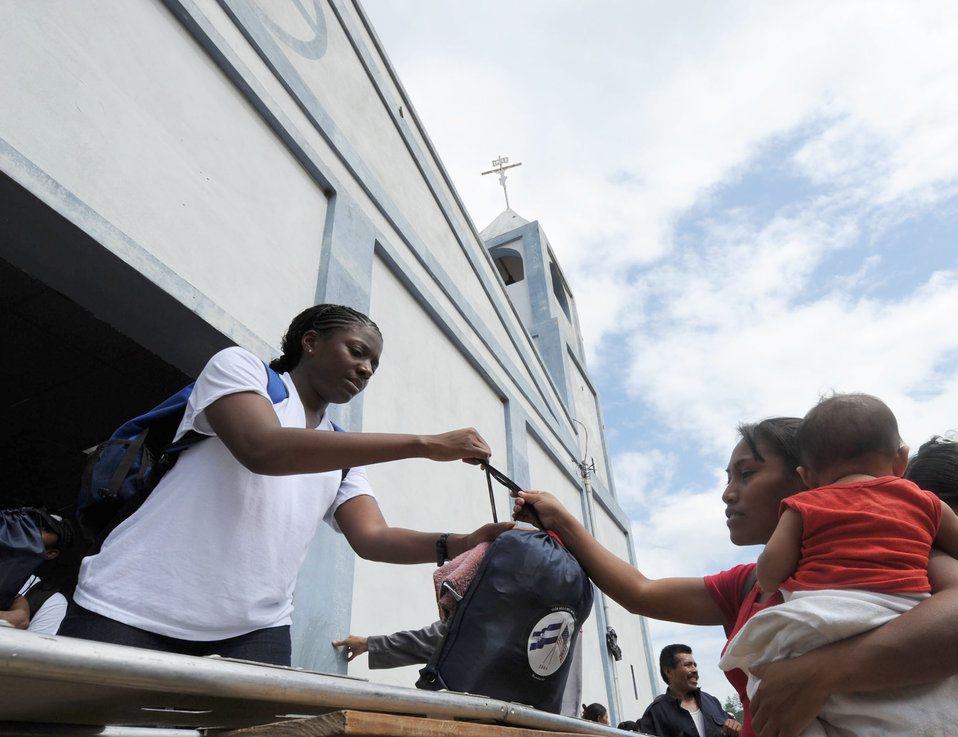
JTF-B

Staff Sgt. Heather Harvey hands a bag containing 40 pounds of food to a villager June 11, 2010, in an isolated village near Comayagua, Honduras. More than 120 military members from Soto Cano Air Base, Honduras, hiked two miles up steep terrain to deliver food to people living in the town. Sergeant Harvey is a 612th Air Base Squadron postal clerk.